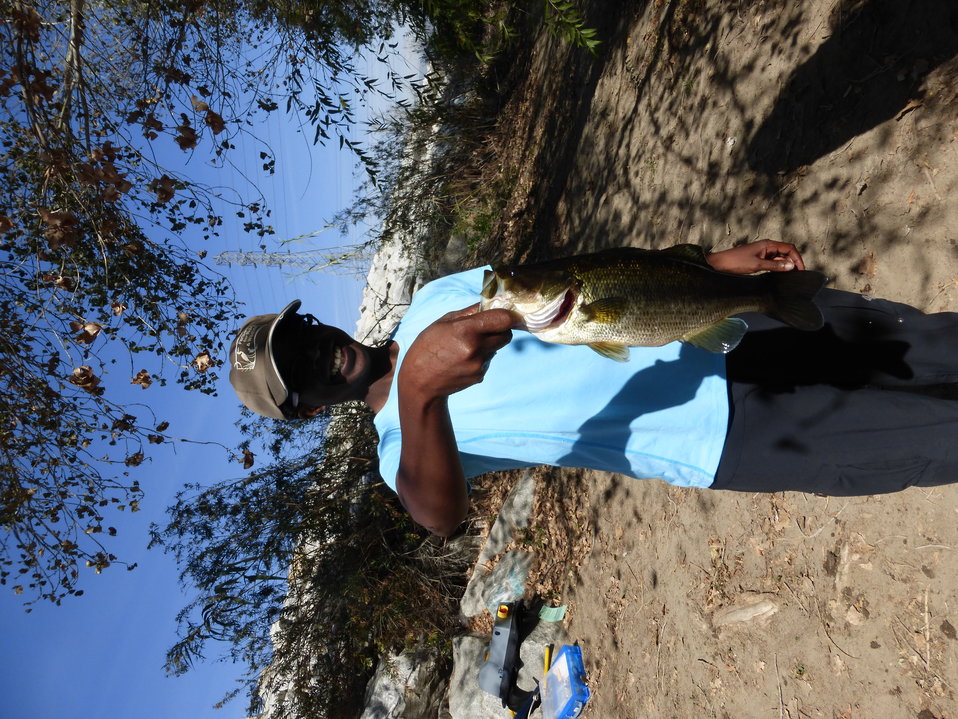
Non native large mouth bass

One of the threats to the Santa Ana sucker is predation by nonnative fish. Fish and Wildlife Service Biologist Ayoola Folarin with a large mouth bass removed from a portion of the Santa Ana River.